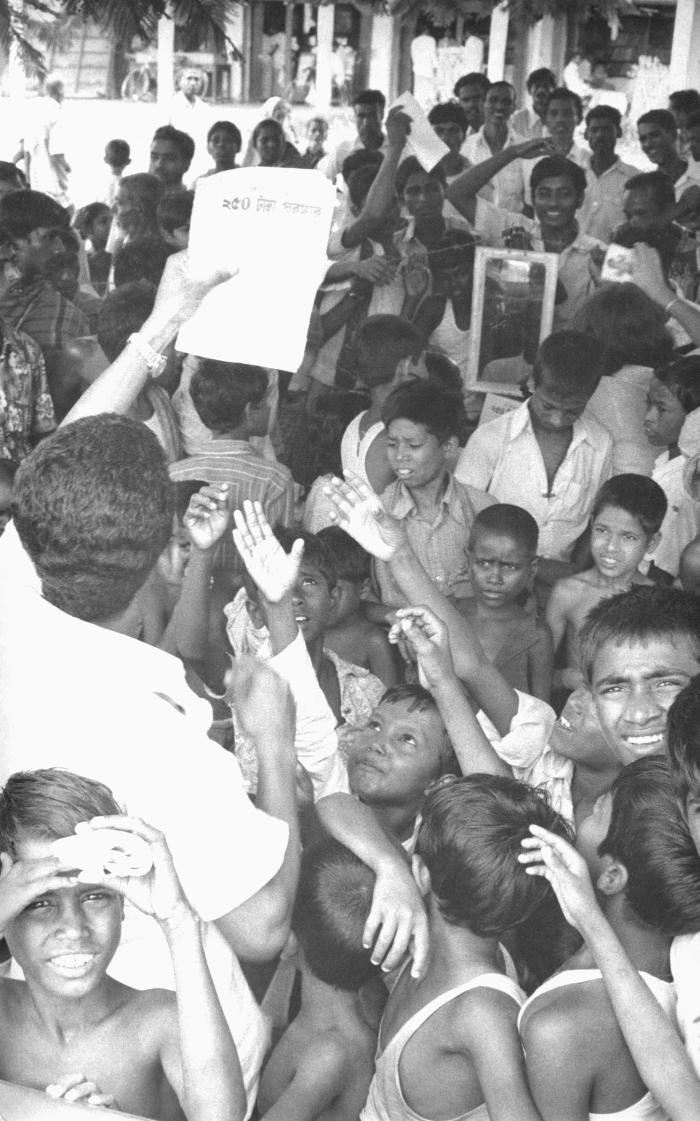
These smallpox eradication team members were photographed as they were in the process of distributing smallpox information leaflets to a large group of villagers, primarily made up of children, who could be seen reaching for the papers held overhead. The last known case of naturally occurring smallpox, a young girl named Rahima Banu, was reported by an 8 year old girl, who was paid her 250 Taka reward. All rewards were handed out in a public place.